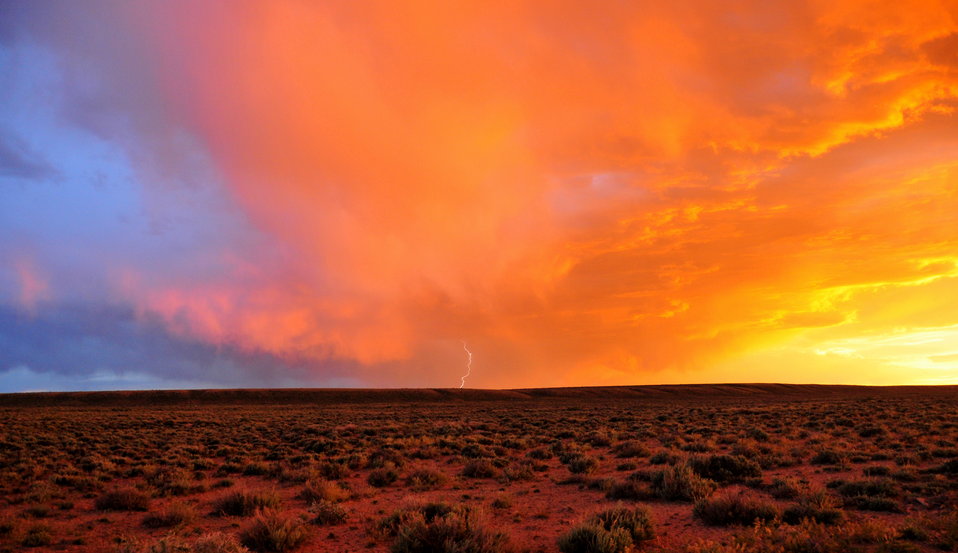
Electric Sagebrush Sunset on Seedskadee NWR 01

An isolated storm rolling across Seedskadee NWR at sunset. Lightning over the sage steppe desert combined with the electric light coming through the clouds made for a very surreal sunset.